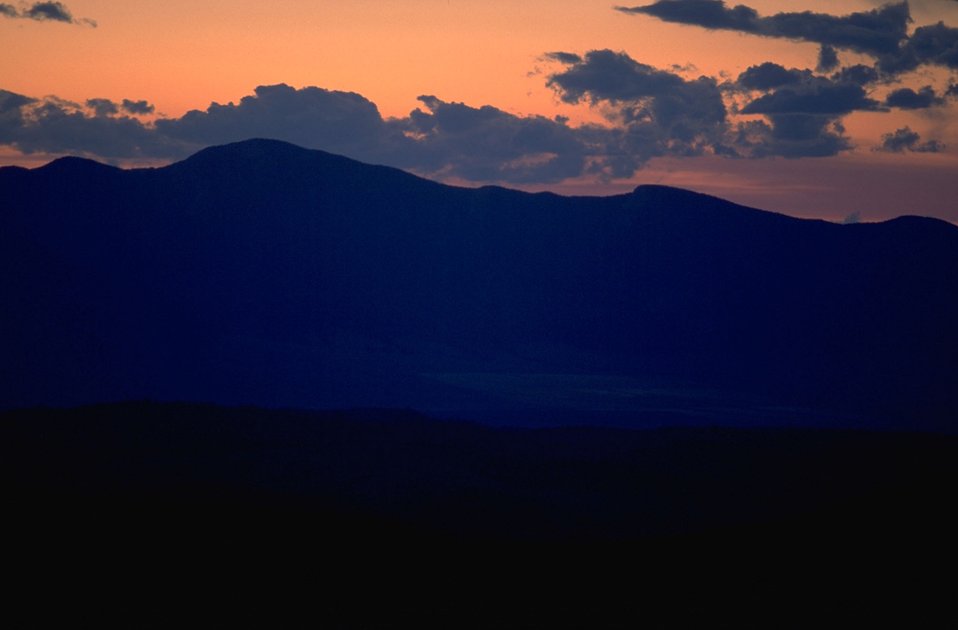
Clouds at sunset with silhouette of mountains